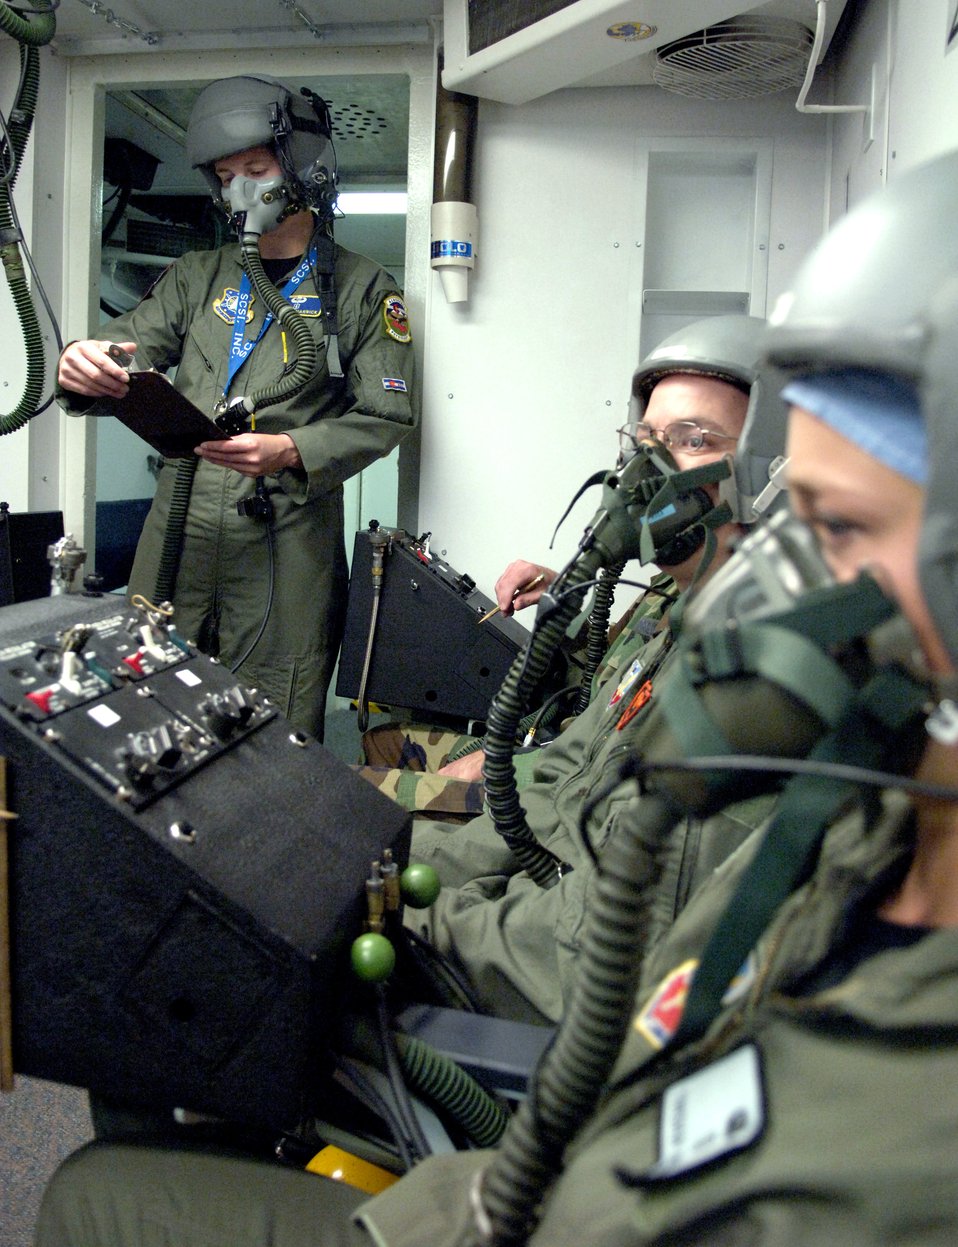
Physiological training crucial for aircrews

First Lt. Melissa Ziarnick looks over a student's test answers during physiological training at Peterson Air Force Base, Colo., on Aug. 10. Lieutenant Ziarnick is a physiologist with the 21st Aerospace Medical Squadron.